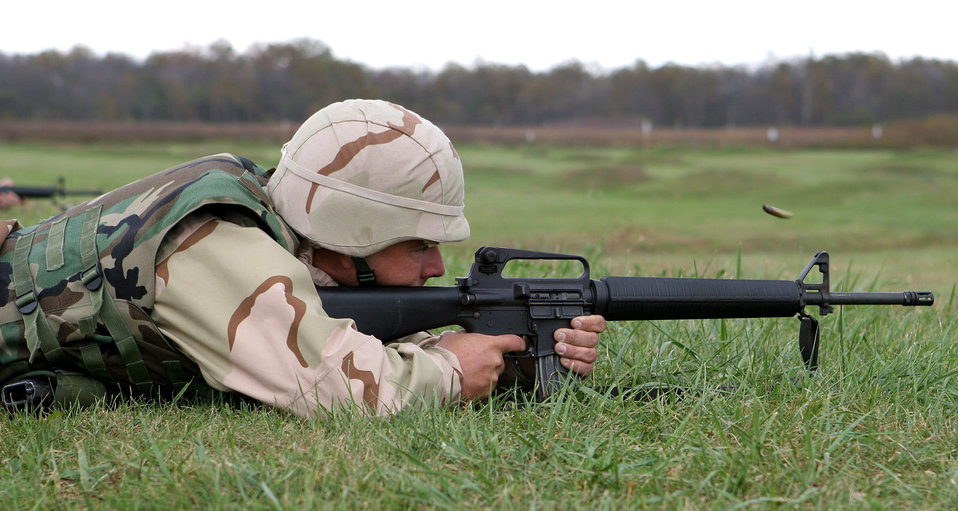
Airmen learn Army skills

CAMP ATTERBURY, Ind. (AFPN) -- Tech Sgt. Steven Halloway, a vehicle maintenance repairman with 18th Logistics Readiness Squadron, fires his M-16 rifle during marksmanship training Oct. 26.